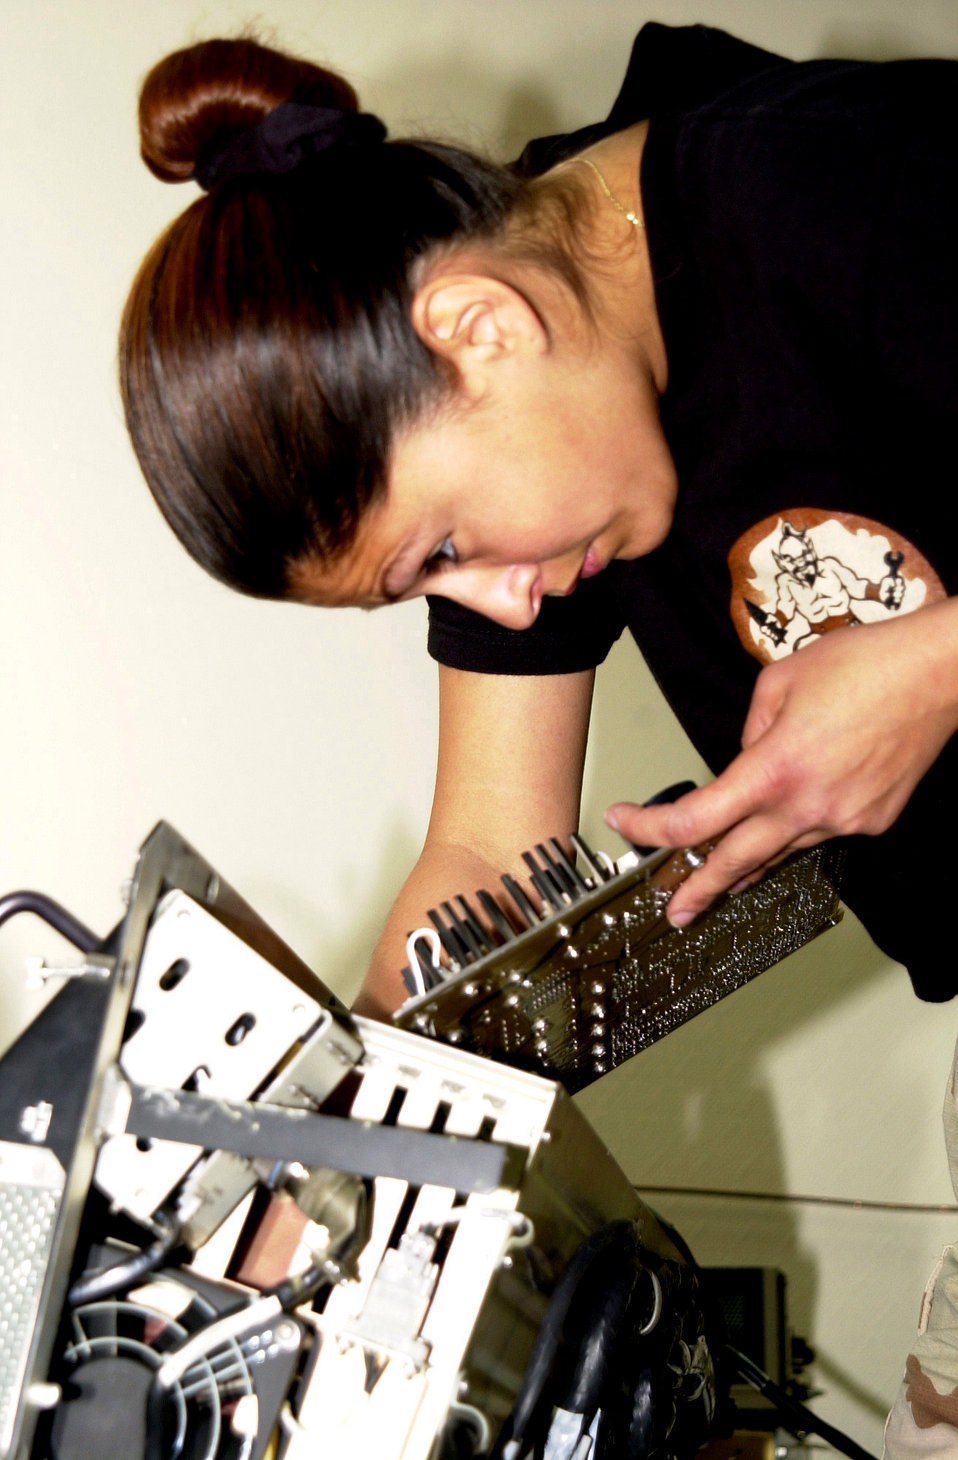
Practicing precision

SOUTHWEST ASIA -- Staff Sgt. Andrea Lopez inspects a circuit card in a digital test set. The test set, which checks out guidance systems on missiles, was brought to the precision measurement equipment laboratory because of power-up and self-test failures. Sergeant Lopez is a PMEL technician with the 379th Expeditionary Maintenance Squadron and is deployed from Aviano Air Base, Italy.